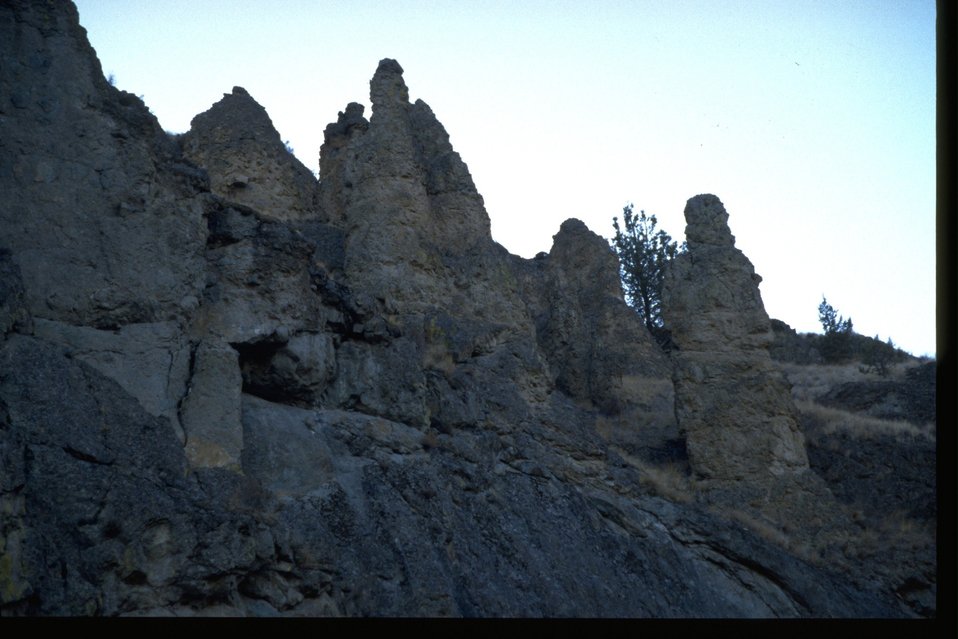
Low lit rock formation along the John Day River.